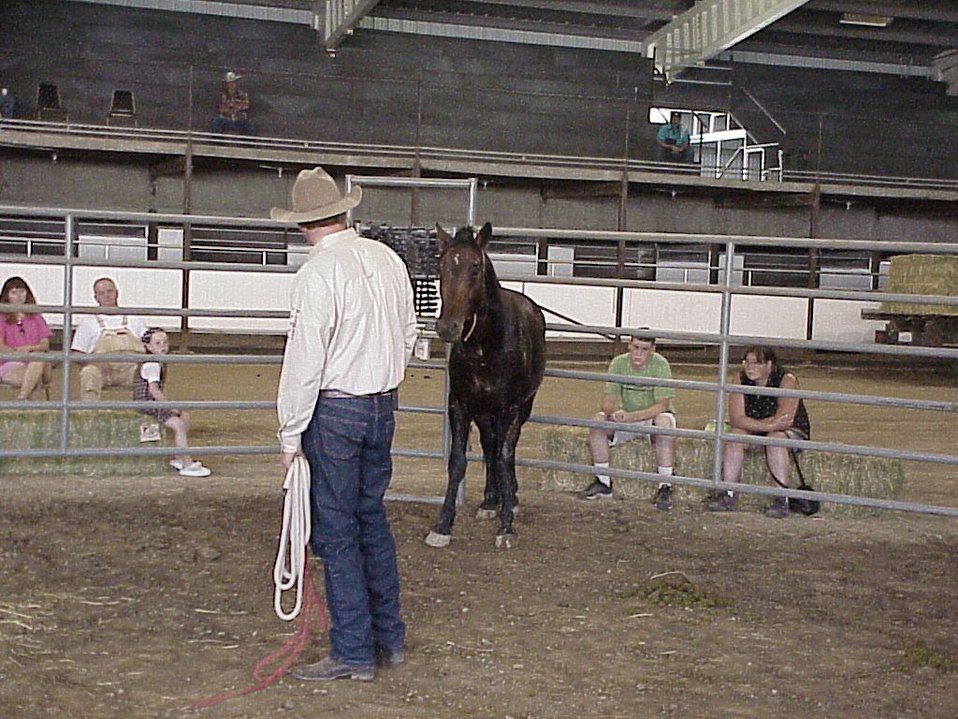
Horse Gentler Mario Johnson Lewiston Wild Horse and Burro Adoption Program Auction WHB indoor auction Cottonwood Field Office UCSC Upper Columbia Salmon Clearwater District